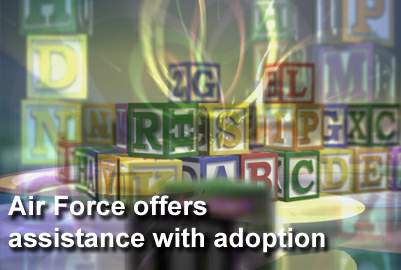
Air Force offers assistance with adoption expenses

With thousands of children available for adoption in the U.S. alone, and with adoption fees that can reach well into the thousands of dollars, Air Force officials are helping ease the initial financial obligations for those military families opting to adopt.